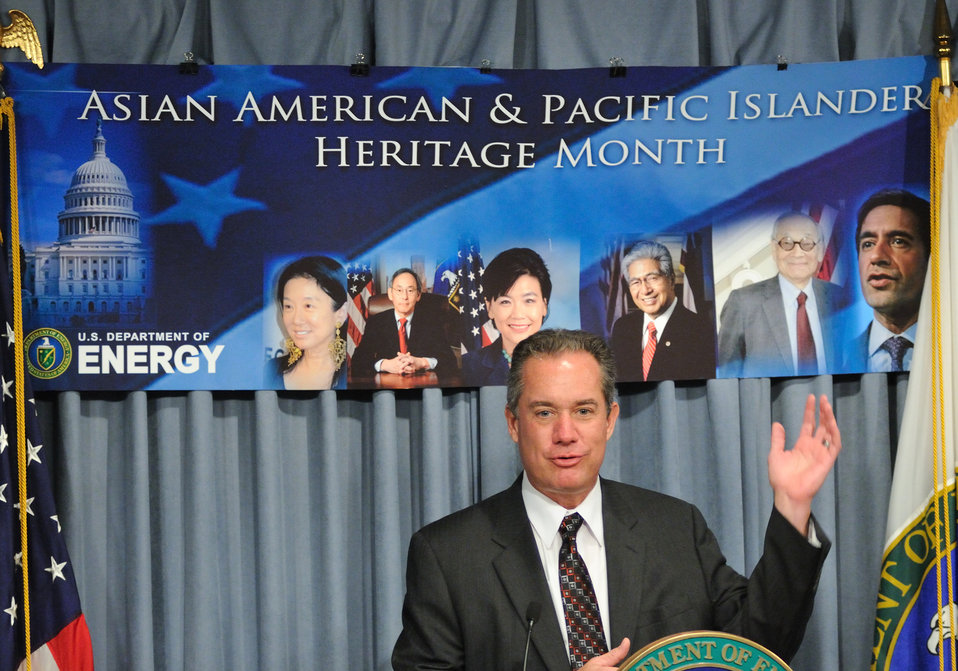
AAPI Heritage Month 2011 (4)